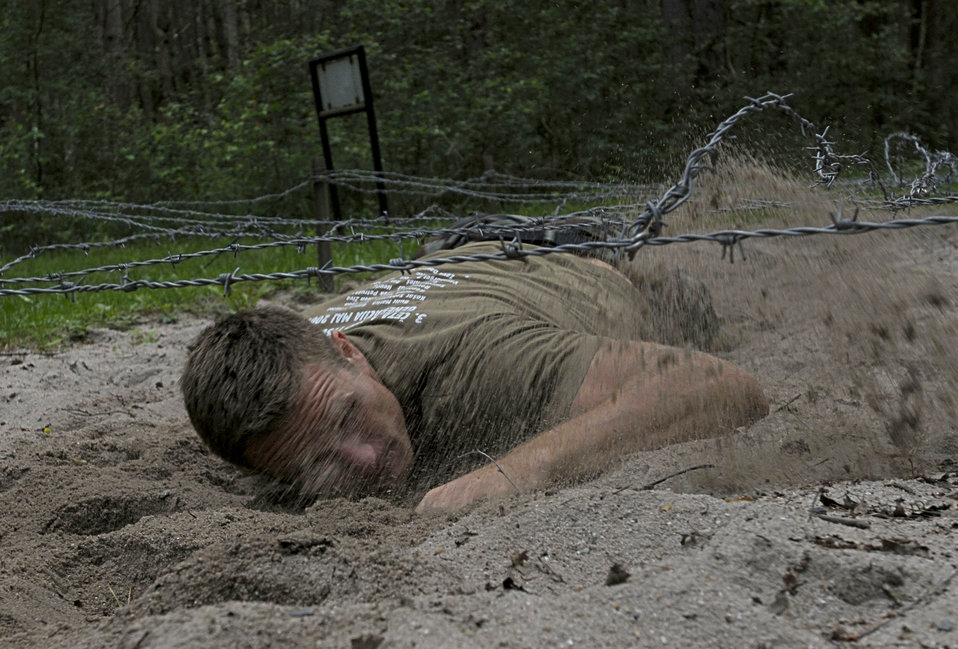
Allied Strike 2011

Slovenian army Pvt. Matic Repina crawls under barbed wire during an obstacle course competition June 23, 2011, as part of Allied Strike at Grafenwoehr Training Area, Germany.